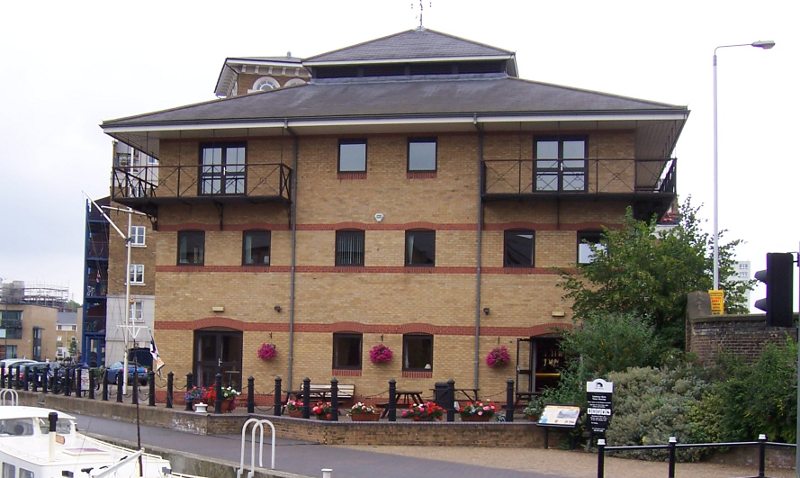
Headquarters of the Cruising Association in Limehouse Basin, London